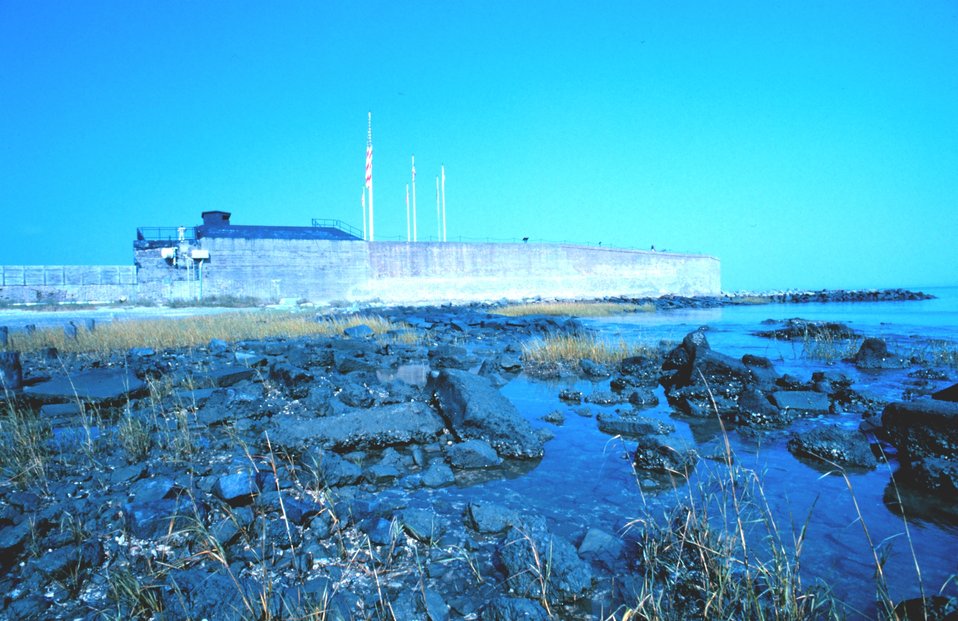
A view of Fort Sumter, where the first shots of the Civil War were fired.